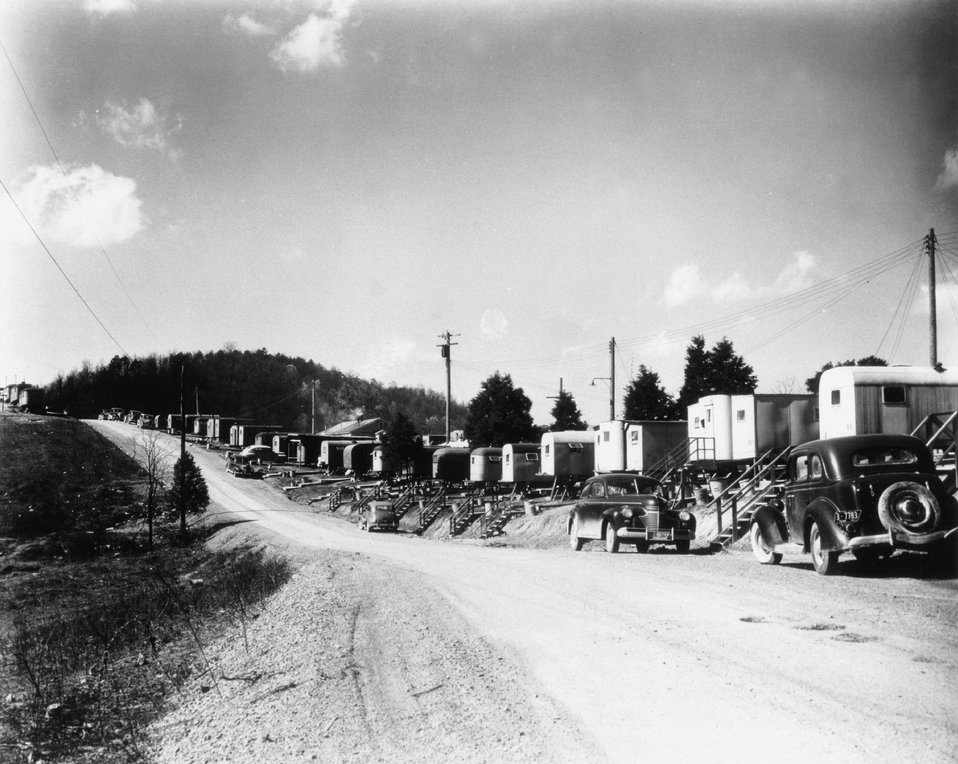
Trailers were obtained from the Federal Public Housing Authority. As operating and technical personnel moved into the area, more government trailers were obtained and accommodations provided for privately-owned trailers. c. 1944